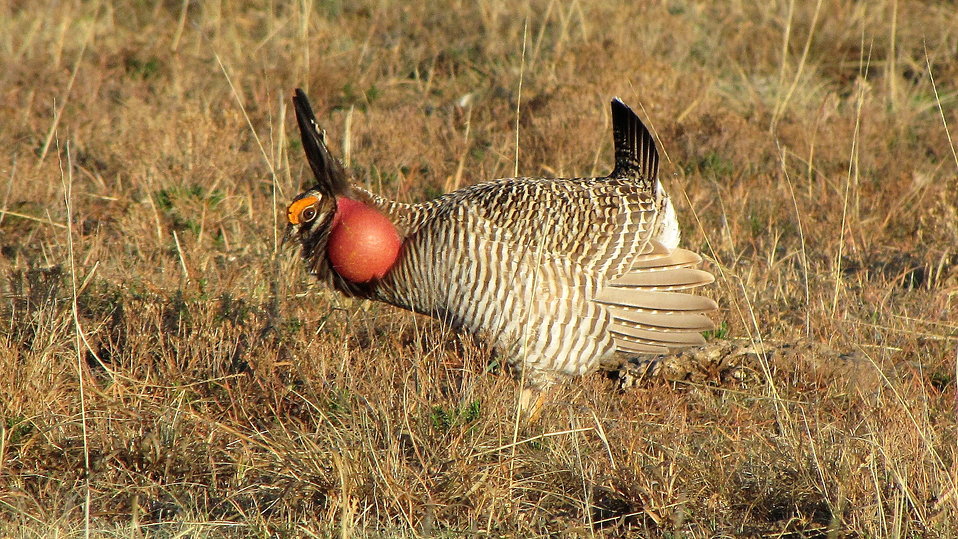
Gesser Prairie Chicken

In a narrow geographic area of western Kansas, the overlapping ranges of lesser prairie-chicken (tympanuchus pallidicinctus) and greater prairie-chicken (tympanuchus cupido) result in occassional hybrization. The resulting hybrid often shows physical features from both species, but is most easily identified by vocalizations during springtime leking rituals.

Photo taken in the Kansas Partners for Fish and Wildlife Southwest Prairie Focus Area.

Credit: Tony Ifland / USFWS

Photo Contest Entry #78